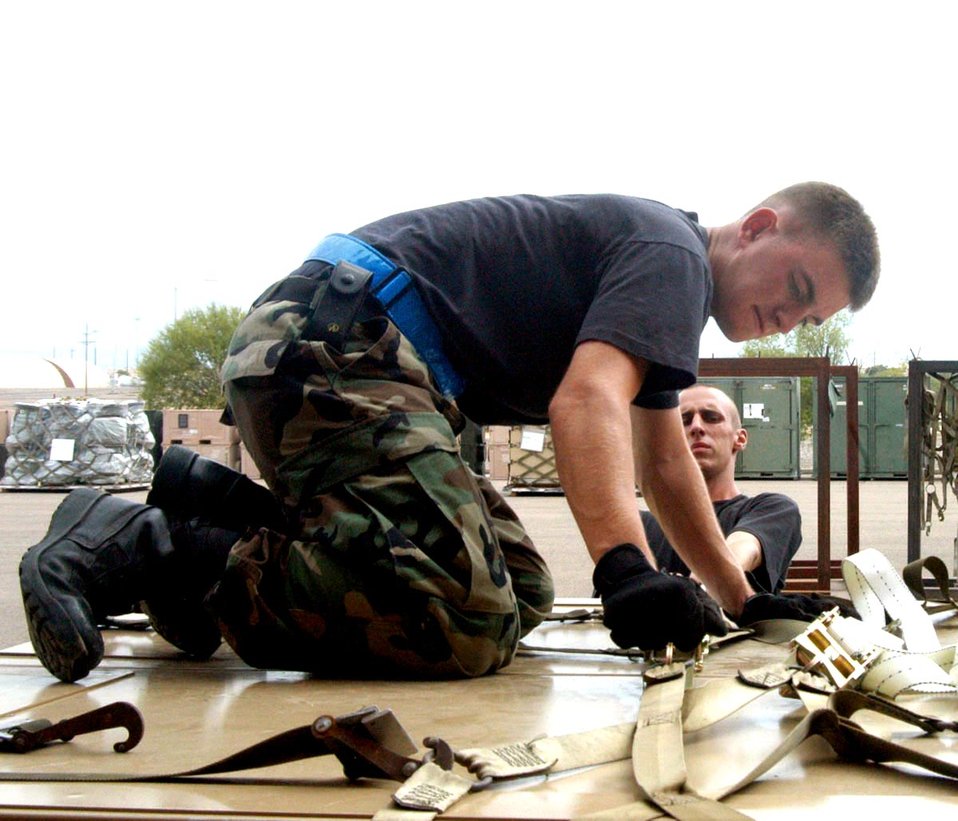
Hurricane relief

HOLLOMAN AIR FORCE BASE, N.M. -- Senior Airman Patrick Hogan (left) and Staff Sgt. Mario Geyser secure containers to pallets here to ensure they are airworthy before transporting them via C-5 Galaxy aircraft to the Gulf Coast. The Airmen are assigned to the 49th Materiel Maintenance Squadron.